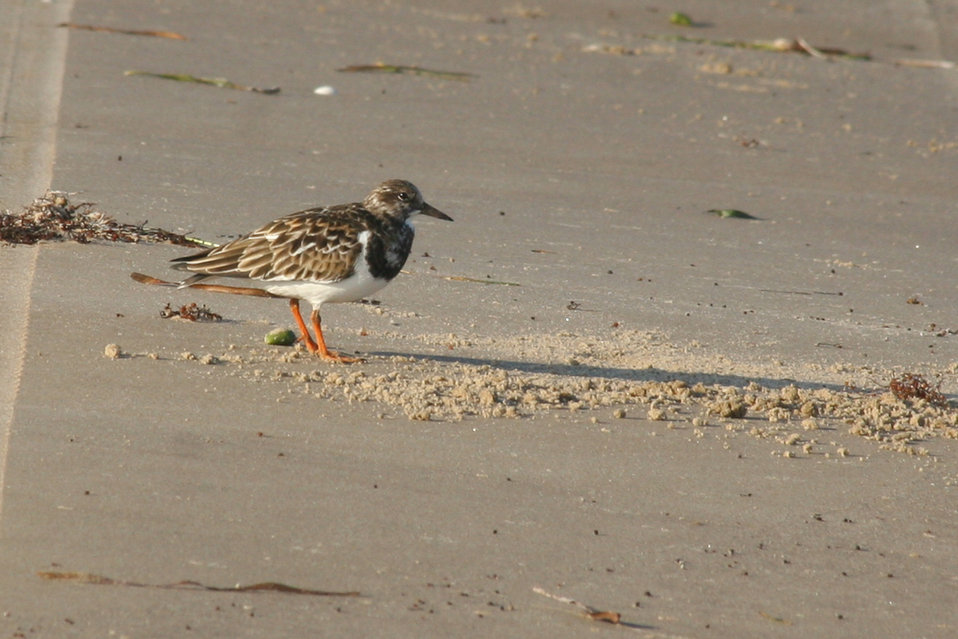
Ruddy Turnstone, Lower Rio Grande Valley NWR

Winter plumage Ruddy Turnstone, Boca Chica Beach, LRGV NWR in Texas.